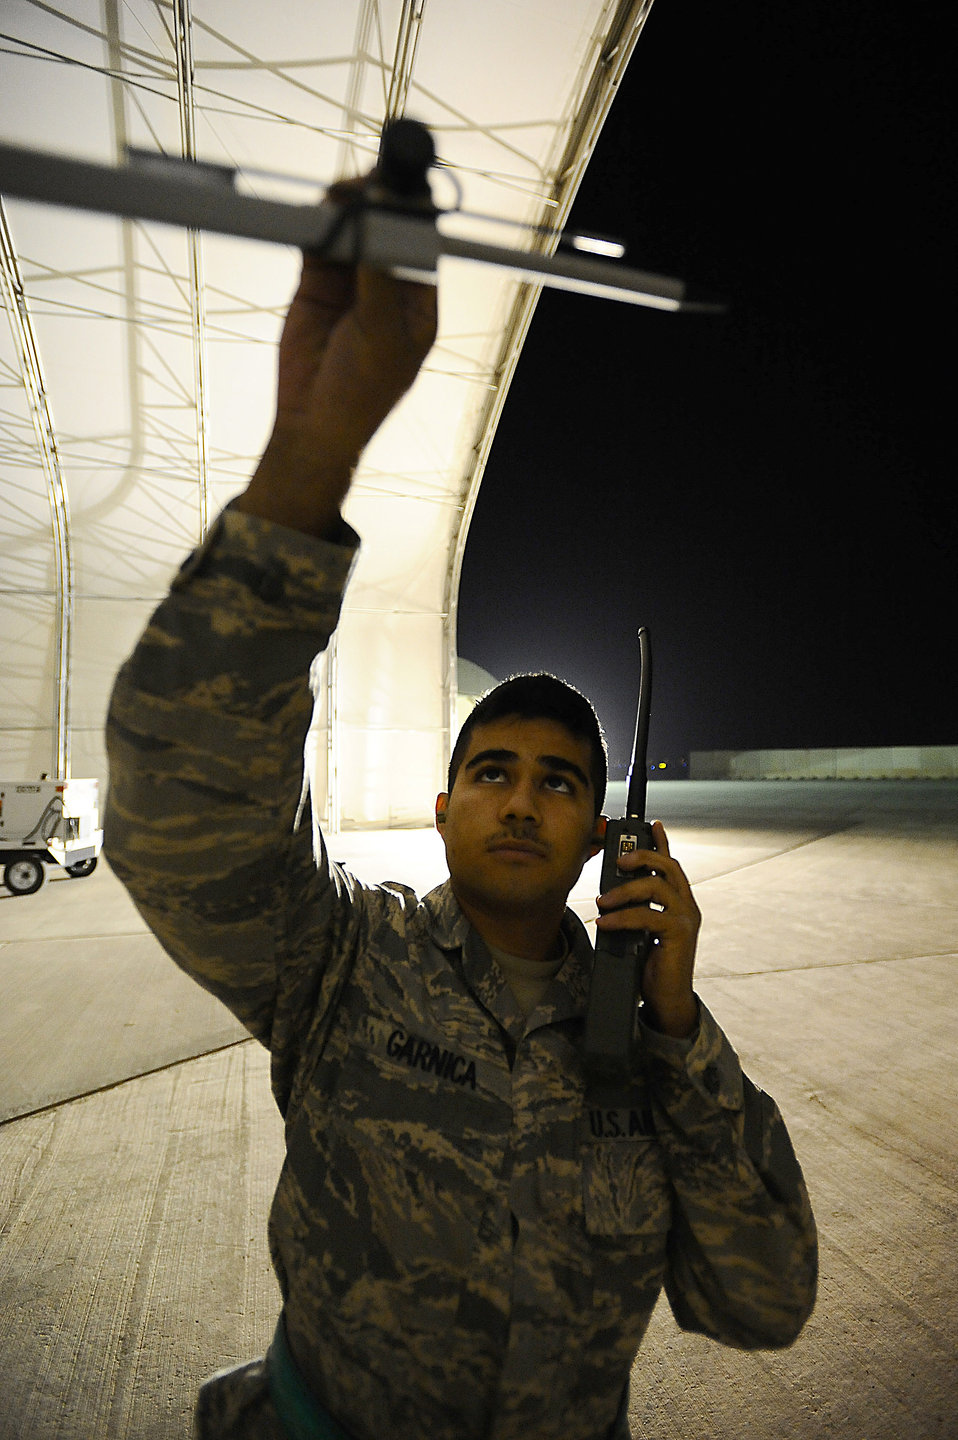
First Reaper aircraft maintenance unit deploys to Balad

Airman 1st Class Hugo Garnica inspects the angle of attack indicator on an MQ-9 Reaper at Joint Base Balad, Iraq, Nov. 18. This indicator on the unmanned aircraft vehicle measures the pitch of the aircraft. Airman Garnica, an assistant dedicated crew chief assigned to the 332nd Expeditionary Aircraft Maintenance Squadron, was performing a preflight check to ensure the aircraft was operational.